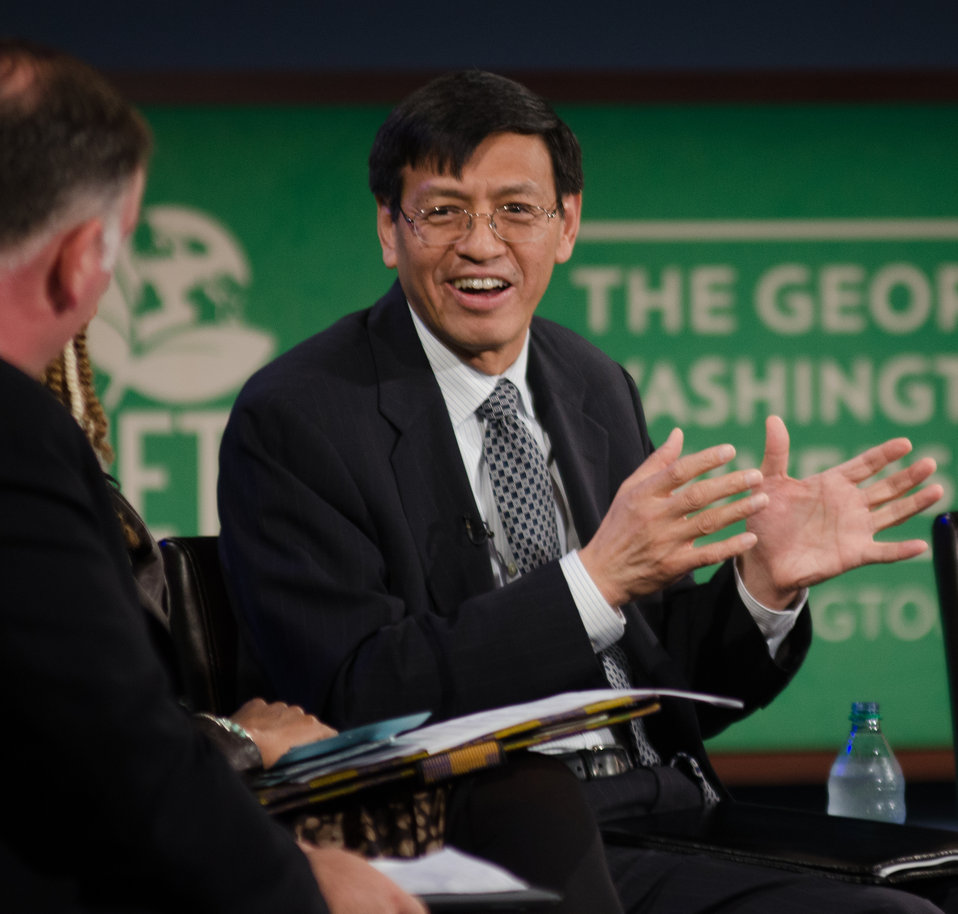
Shenggen Fan, Ph.D. Director General, International Food Policy Research Institute on the discussion panel “Policy, Palate, and the Plate-Innovation and how policy can impact practice at the Feeding the Planet Summit of leaders from agriculture, business, finance, academia, Non Governmental Organization, government and media, along with a large contingent of college students to engage around promising innovations in global agriculture and food security. The Summit spotlights transformation and scalable developments in policy, practices and technologies with special attention to related issues of gender, climate change and urbanization at The George Washington University in Washington, DC, on Wednesday, Oct. 31, 2013.